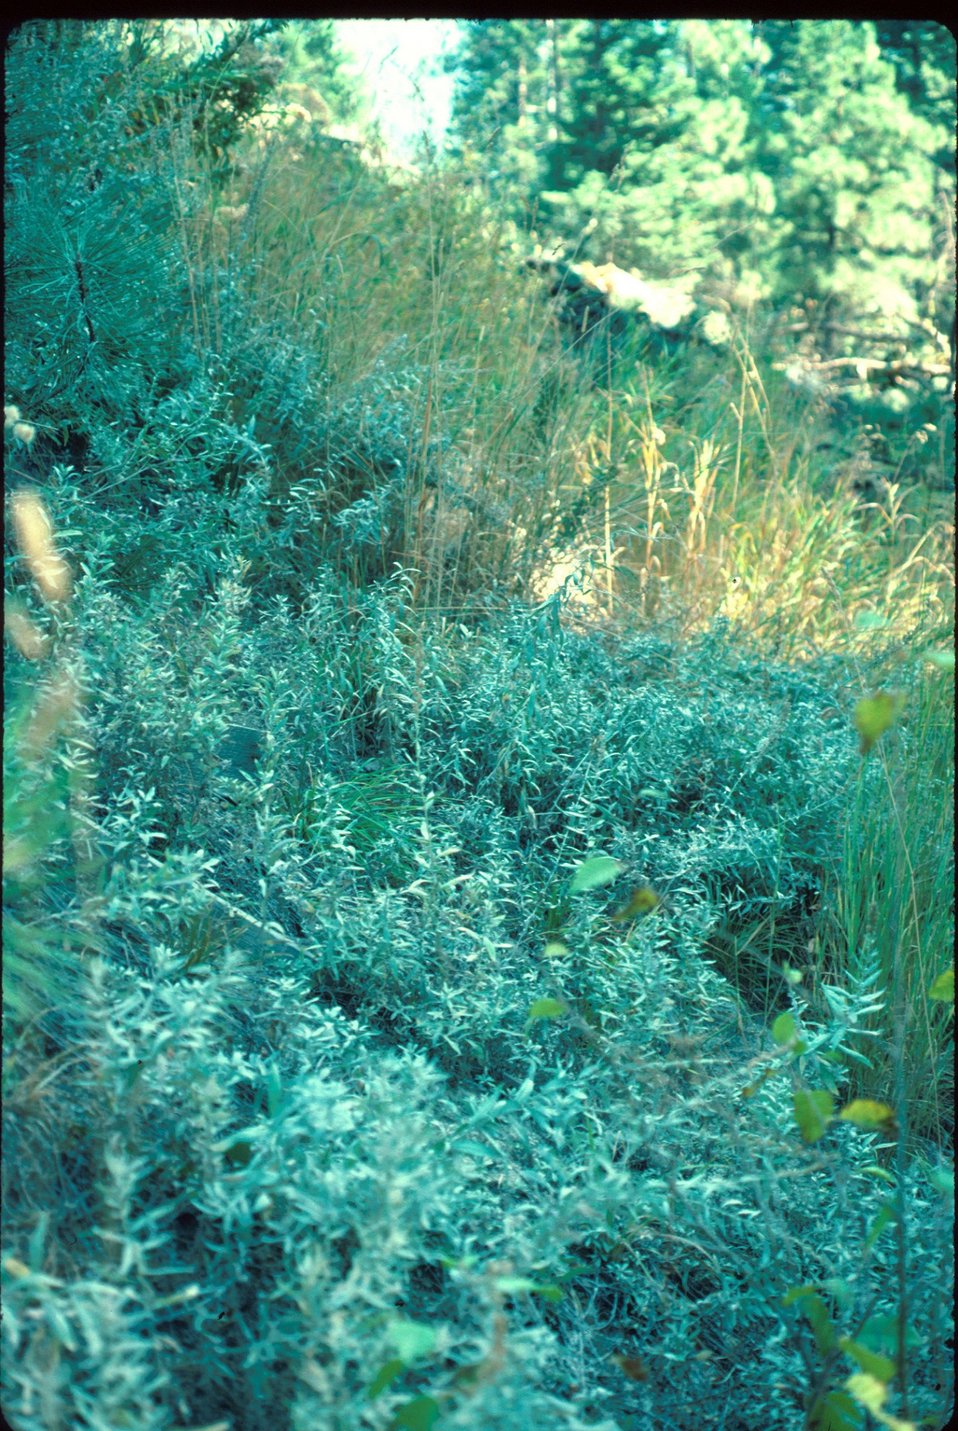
Started from cutting from middle fork of Boise River Artemisia ludivicana Wildflower Wormwood